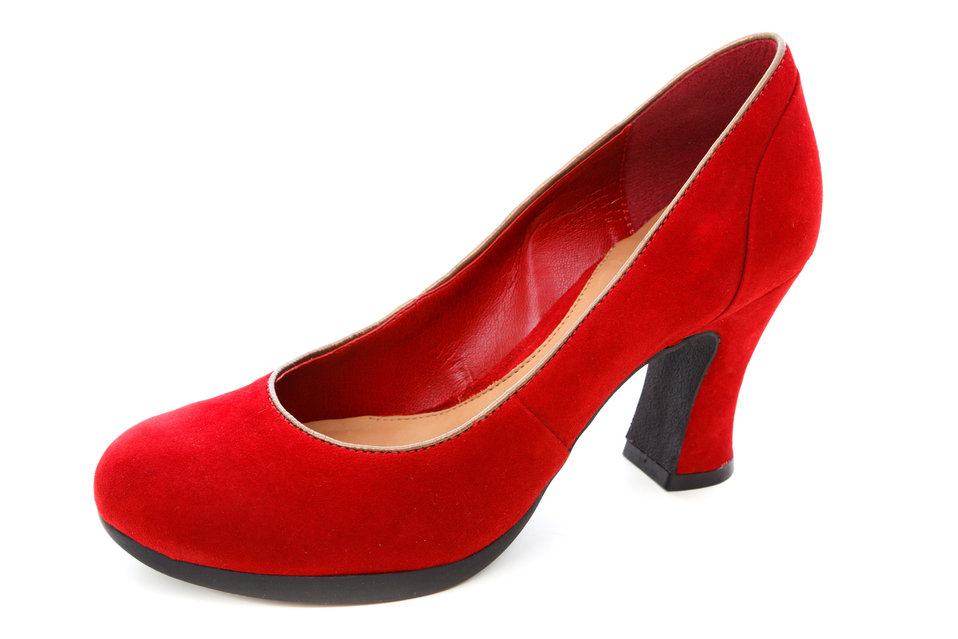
Single red shoe isolated on white background.